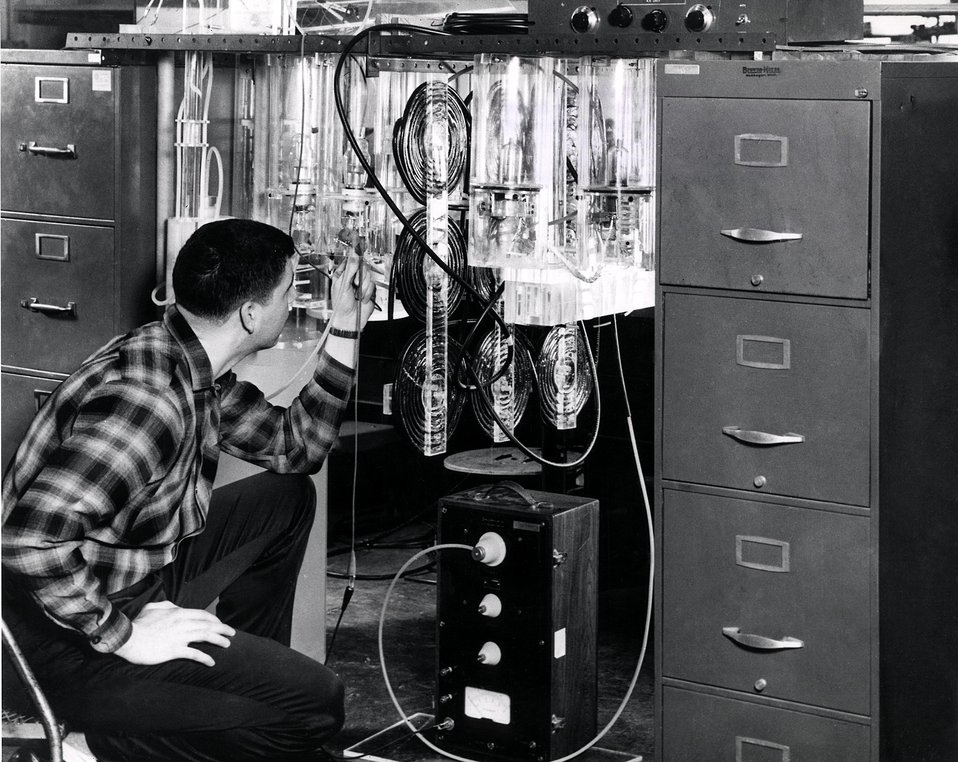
This photograph shows a portion of 100 kv voltage supply which is the heart of a 430 kv source.
c.1965